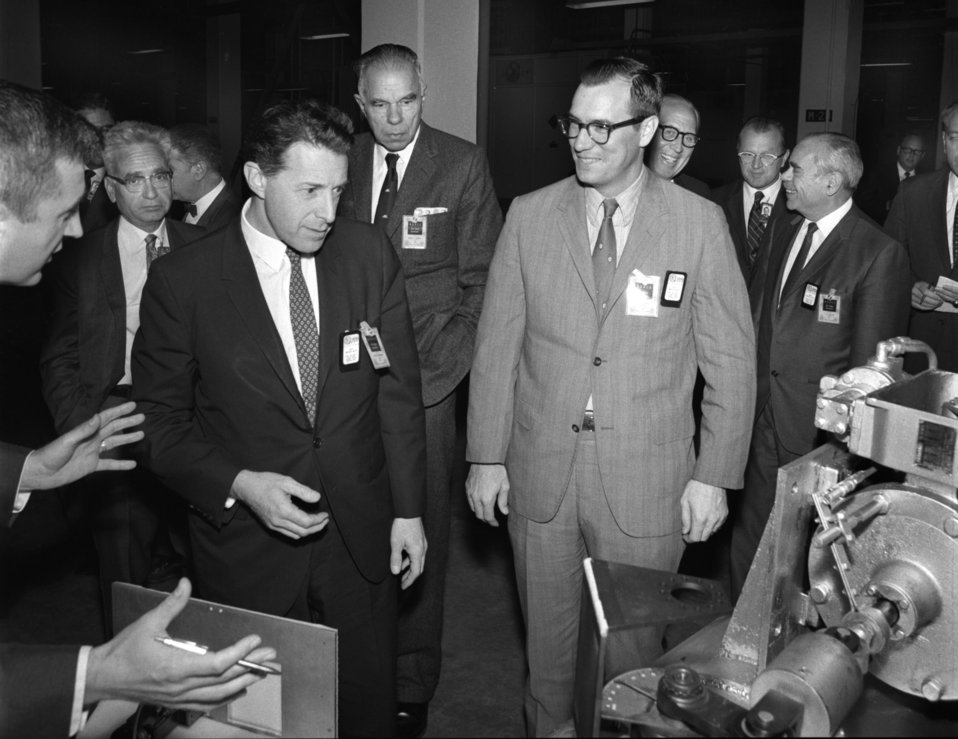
Caspar Weinberger and D.B. Rice visit to Oak Ridge with Glenn Seaborg 1970

70-337 DOE photo Frank Hoffman 10-23-1970 L to R Alvin Weinberg, Caspar Weinberger, Glenn Seaborg, Donald Rice, Clarence Larson, ID pending, Sam Saphire